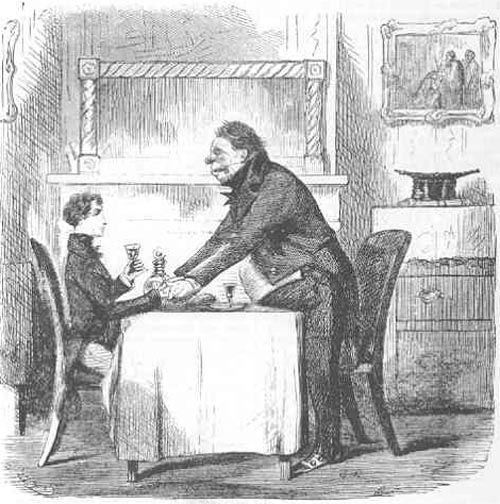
Great Expectations, Uncle Pumblechook clasping Pip's hands after being endowed with his great expectations, by John McLenan. Français : Les Grandes Espérances : Mr Pumblechook serrant les mains de Pip promis au statut de gentleman, par John McLenan.